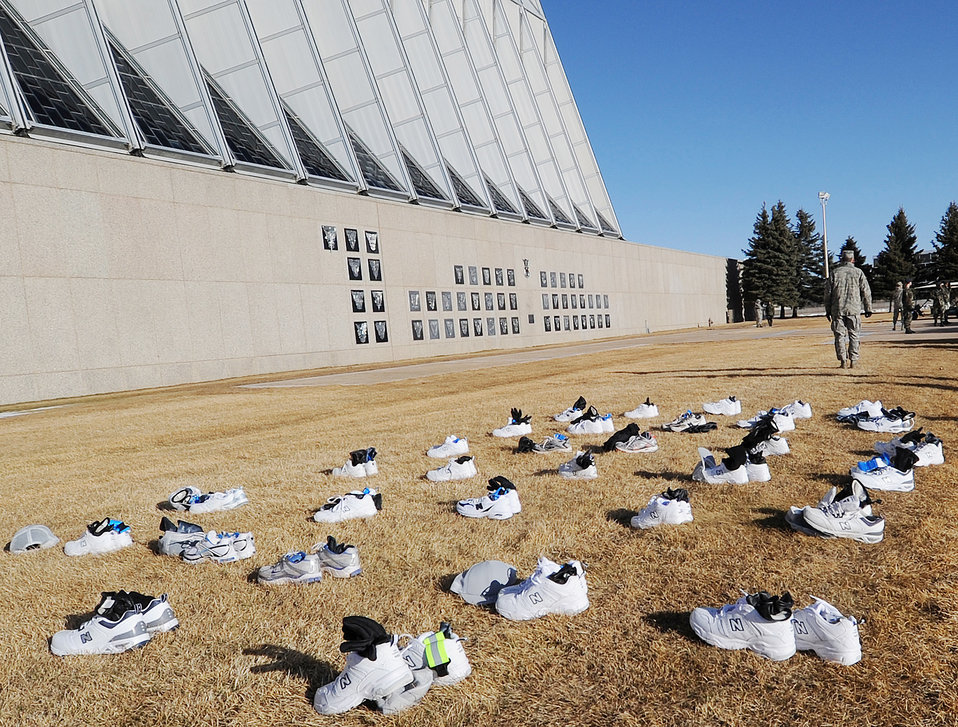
Recognition Days

Rows of sneakers and other items are lined up on the U.S.Air Force Academy's Terrazzo while their owners participate in the annual recognition events at the Academy March 12, 2010.